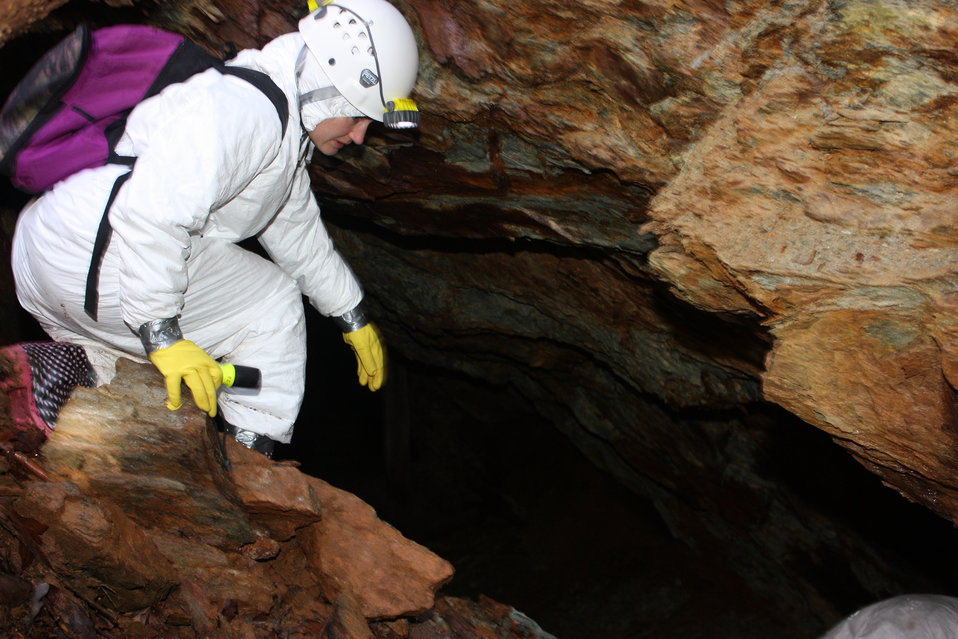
NCWRC biologist Gabrielle Graeter entering mine